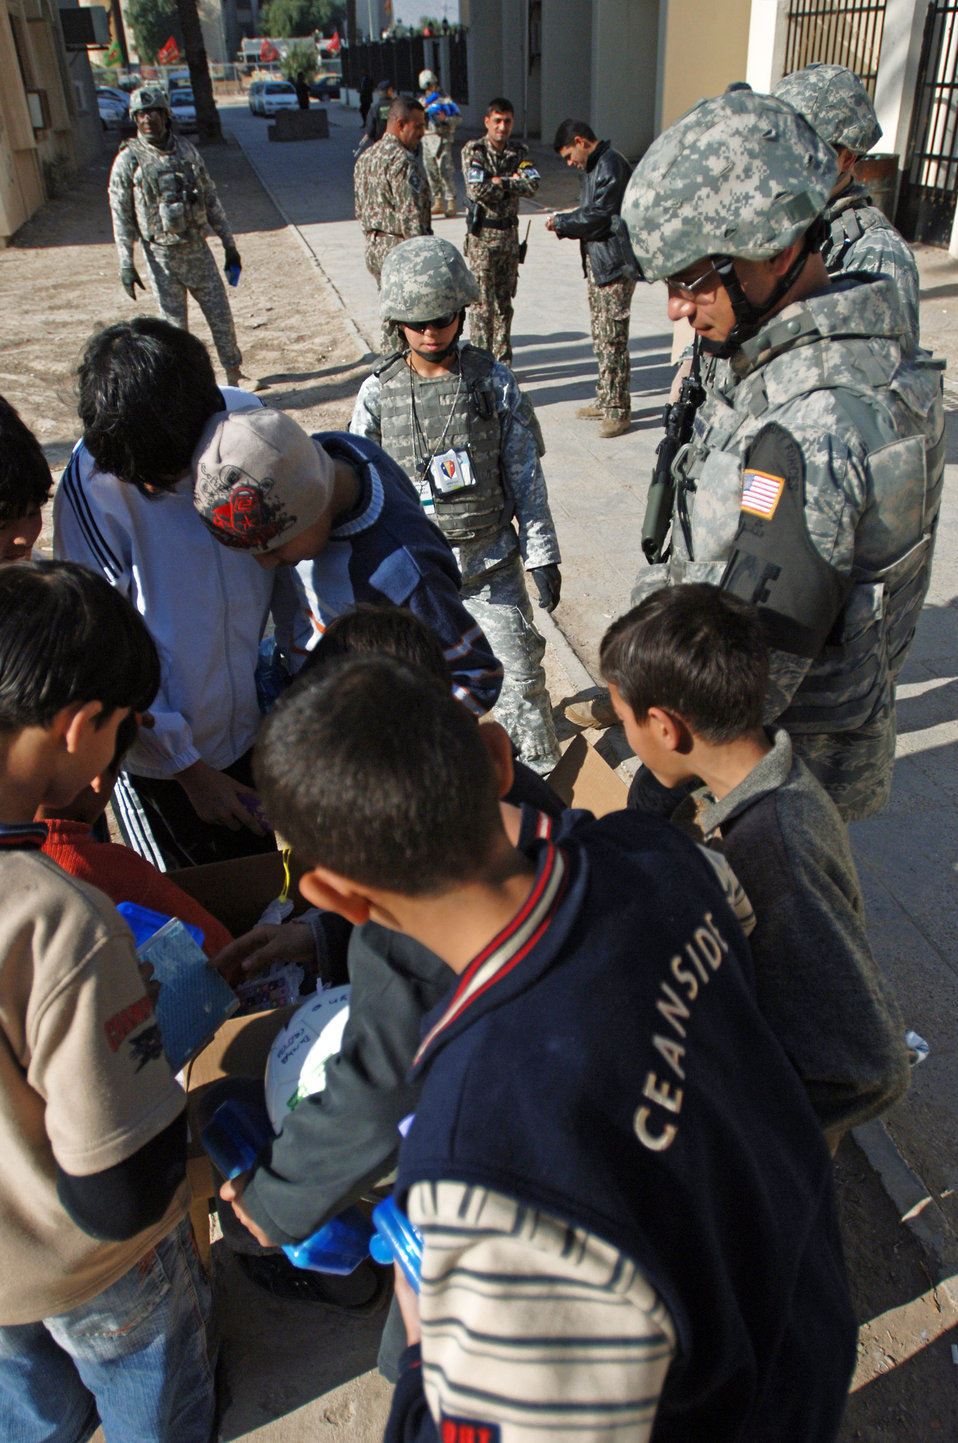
Airmen foster community relations in International Zone

Capt. Ben Washburn hands out toys, school supplies and clothes while on foot-patrol in an apartment complex Jan. 10 in the International Zone of Baghdad, Iraq. The items were gathered by a group of volunteer servicemembers at Joint Base Balad, Iraq, called the Kids of Iraq. The items come from donators in the United States. Captain Washburn is the 732nd Expeditionary Security Forces Squadron Det. 4 operations officer. He is deployed from Vogelway, Germany, and is a native of Colorado Springs, Colo.